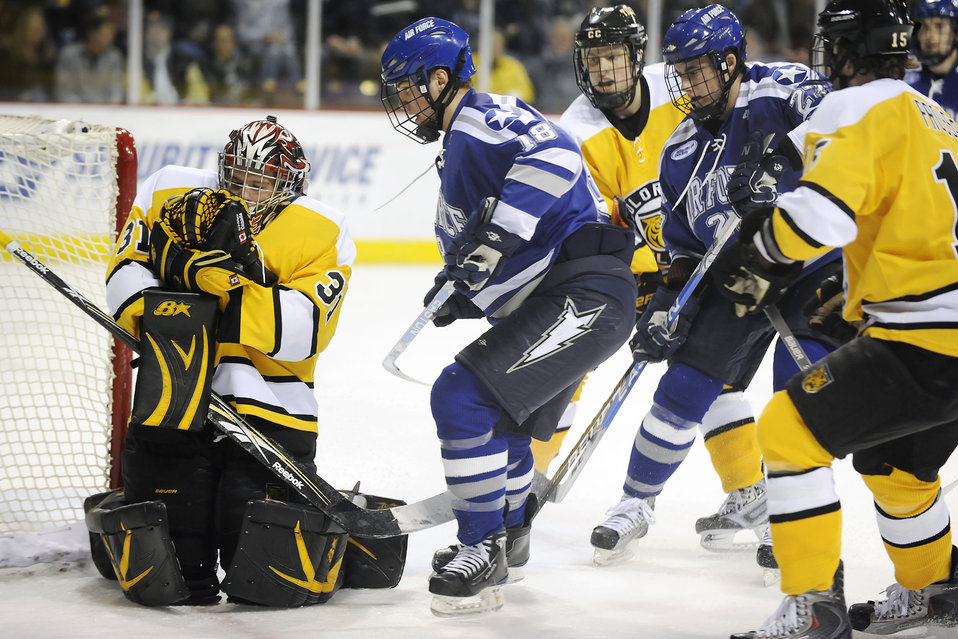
Falcons lose in match with Colorado Tigers

Colorado College goalkeeper Joe Howe makes one of his 20 saves as Falcon freshman forward Kyle De Laurell looks for a rebound in front of the goal. Colorado College beat Air Force 2-0 in a non-conference hockey game Feb. 5, 2010, at the World Arena in Colorado Springs, Colo.